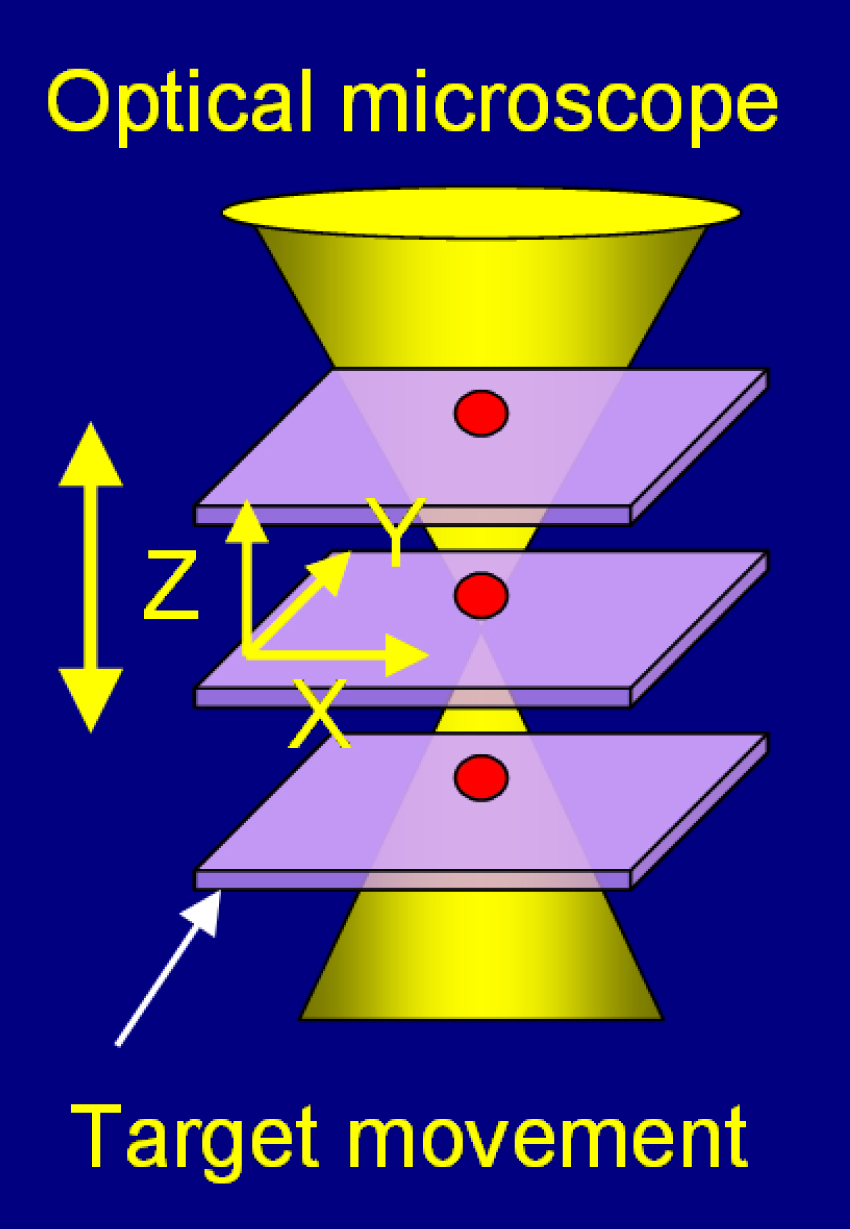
TSOM; Nanoscale Optical Technique

This schematic shows how a TSOM image is acquired. Using an optical microscope, several images of a 60 nanometer gold particle sample (shown in red) are taken at different focal positions and stacked together to make the TSOM image.